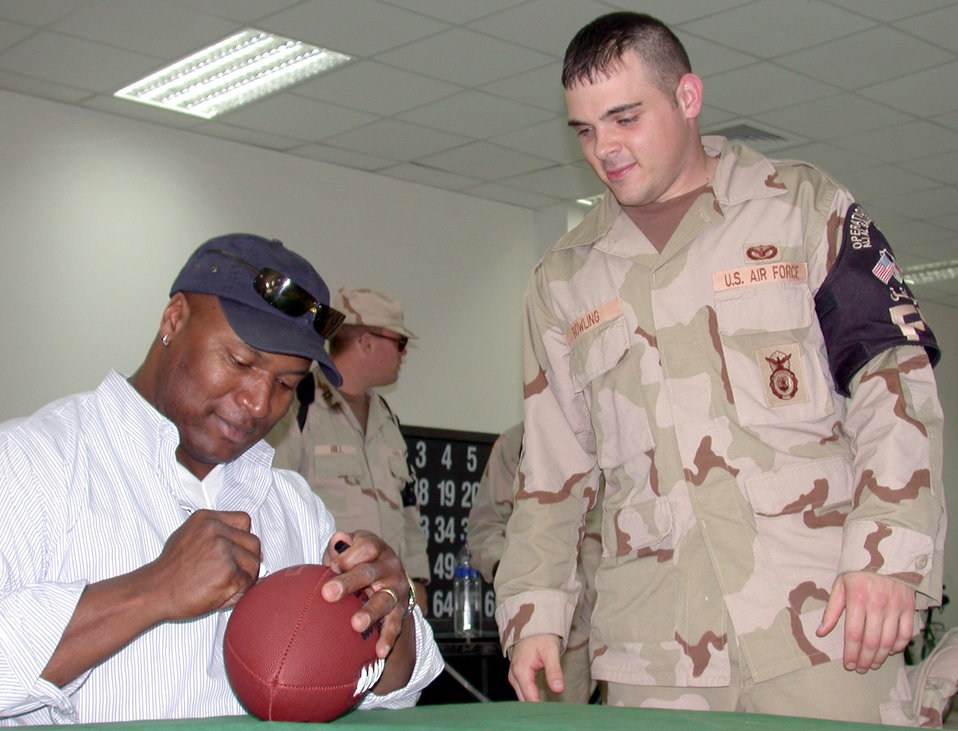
Bo knows Super Bowl parties

SOUTHWEST ASIA -- Airman 1st Class Joseph Bowling (right) gets his football signed by former professional football and baseball player Bo Jackson at a forward-deployed location Feb. 1. Mr. Jackson traveled to Southwest Asia with 200,000 pounds of chicken wings, meatballs and his signature